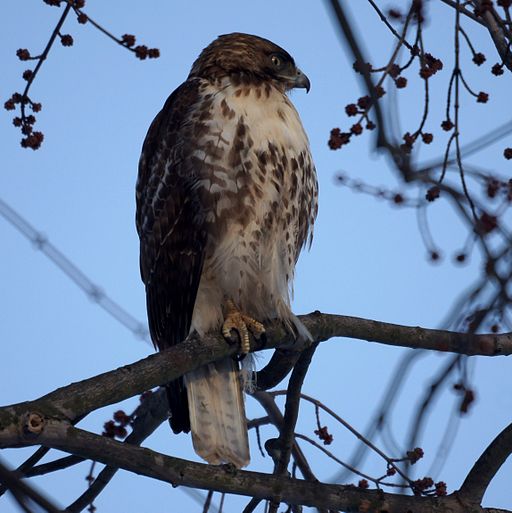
Red-tailed hawk

photo from WikimediaCommons